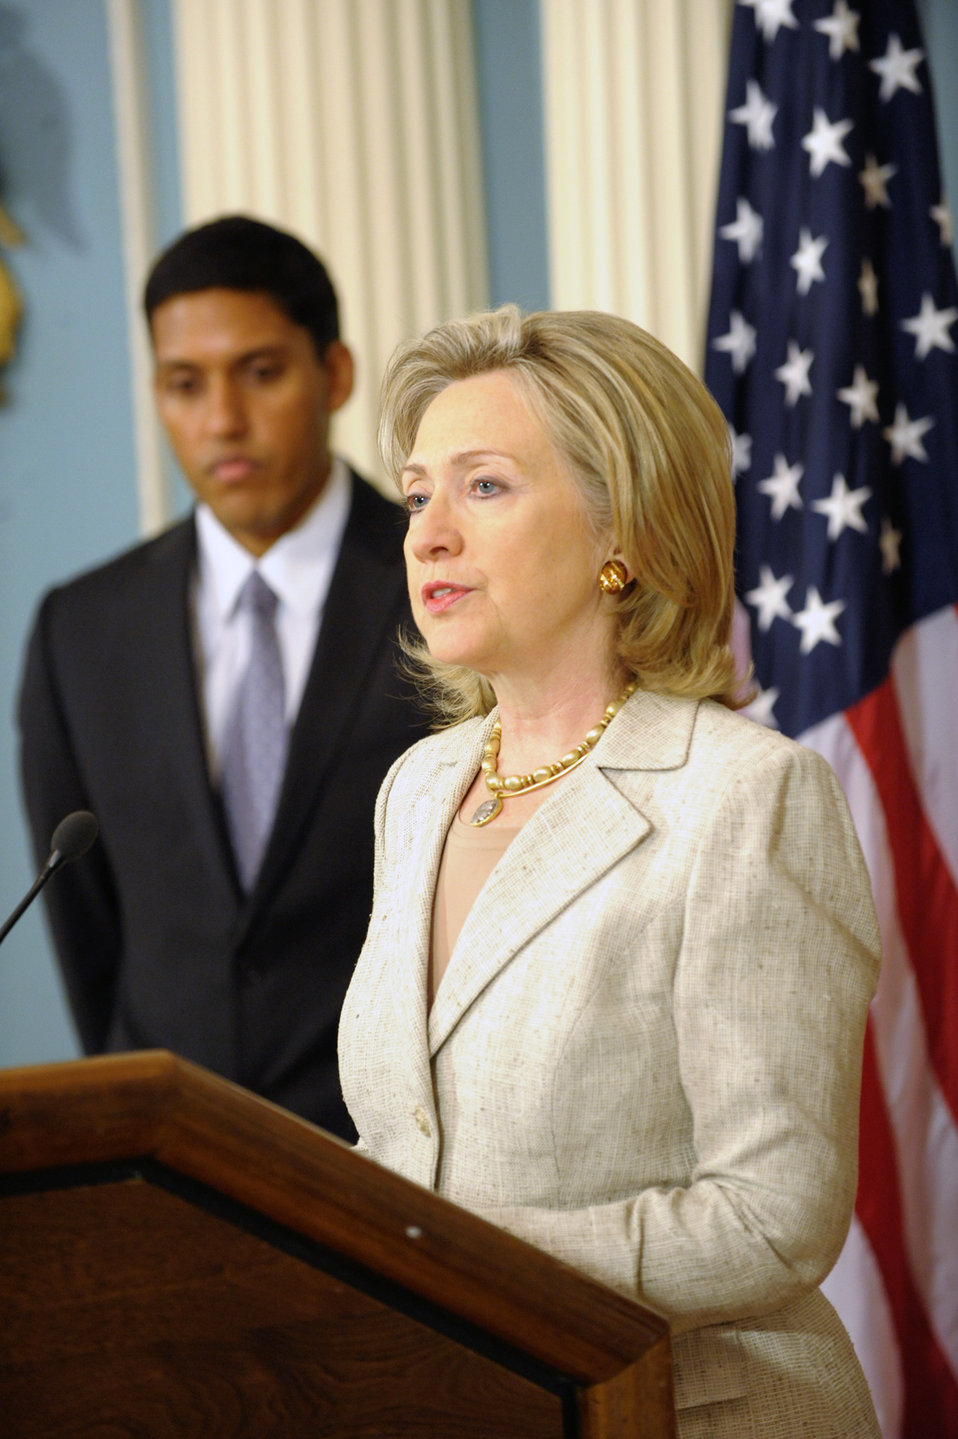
Secretary Clinton Delivers a Statement on the Flooding in Pakistan With USAID Administrator Shah

U.S. Secretary of State Hillary Rodham Clinton delivers a statement and USAID Administrator Rajiv Shah responds to questions on the flooding in Pakistan at the U.S. Department of State in Washington, D.C., on August 4, 2010.